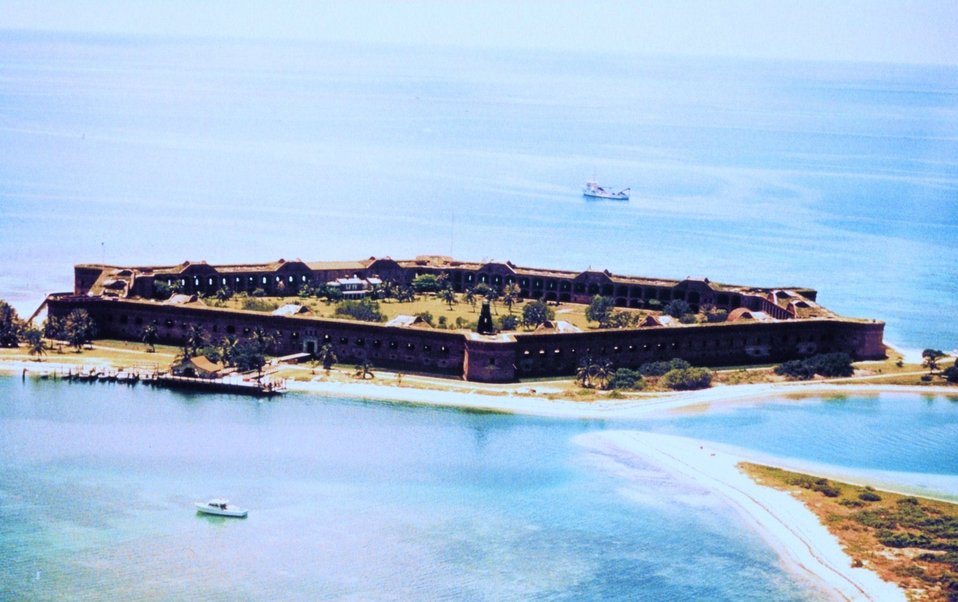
Aerial view of Fort Jefferson with NOAA Ship FERREL anchored offshore in background.